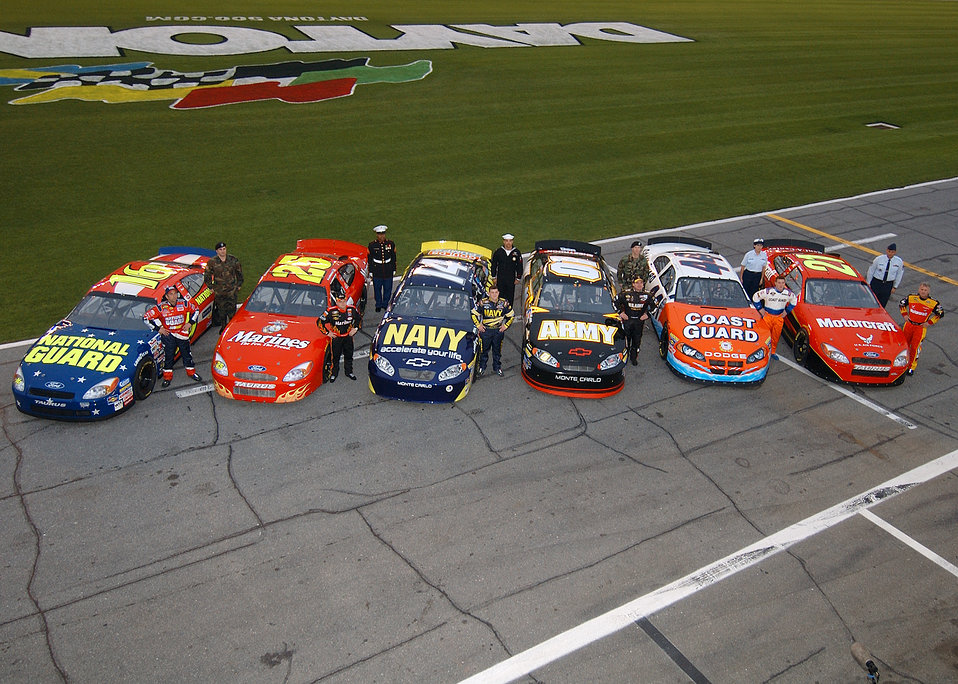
Friendly competition

DAYTONA INTERNATIONAL SPEEDWAY, Fla. -- The military-sponsored NASCAR cars line up on the speedway, ready to kick off the 2004 Nextel Cup season here Feb. 15. Ricky Rudd (far right) will be driving the Air Force-sponsored Wood Brothers Racing #21 car. The other service's drivers are (from left) Greg Biffle for the National Guard; Bobby Hamilton Jr. for the Marines; Casey Atwood for the Navy; Joe Nemechek for the Army; and Justin Labonte for the Coast Guard. Standing with the drivers are representatives from each service.